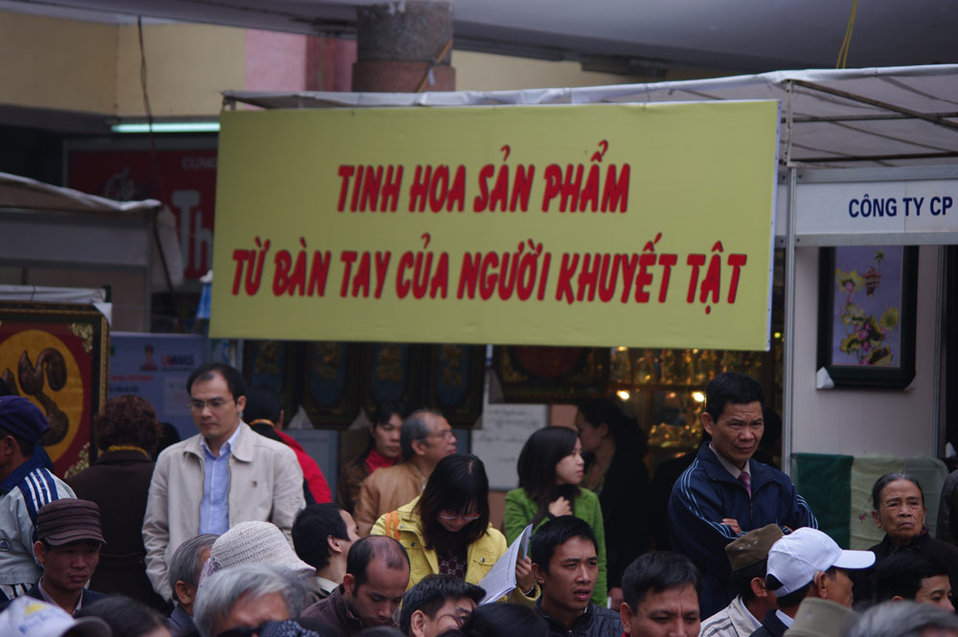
International Day of Persons with Disabilities 2010